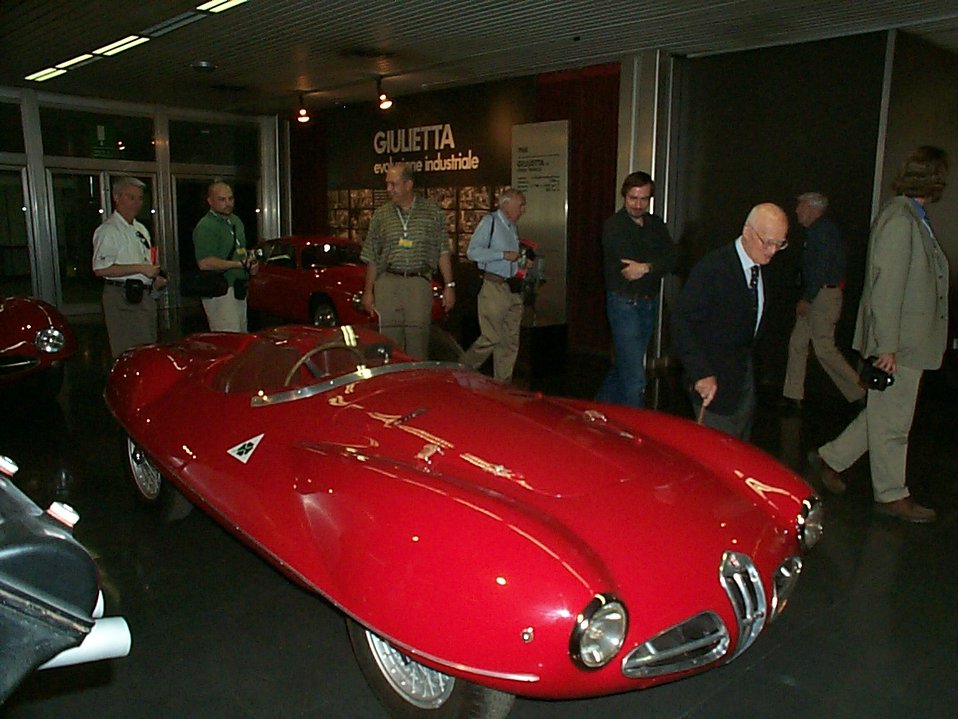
Carlo Felice Bianchi Anderloni, May 22, 2003 with his Disco Volante en:Category:Images of automobiles